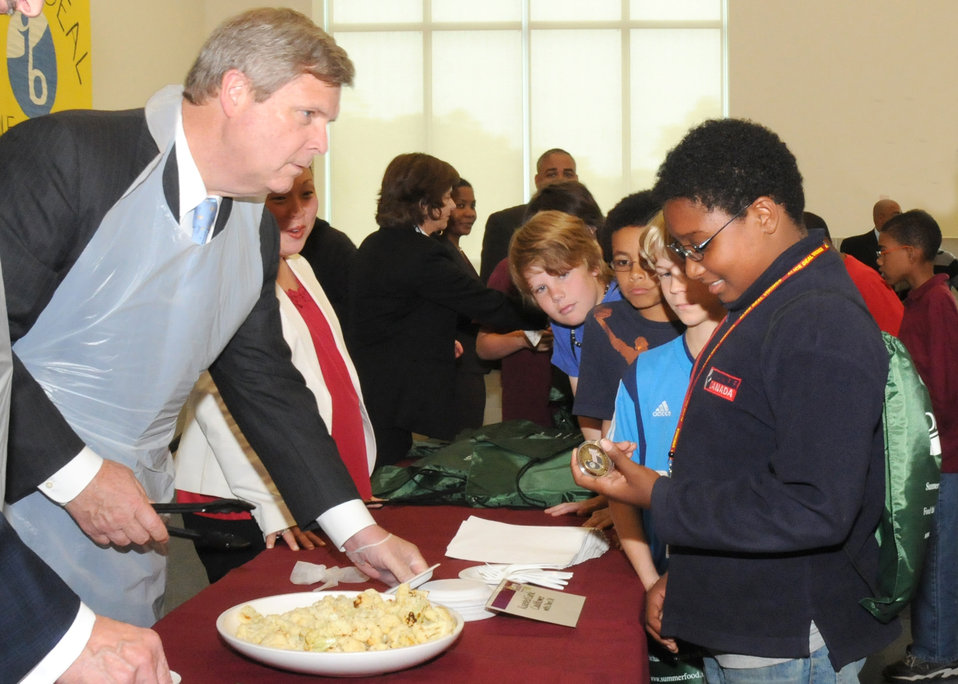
Agriculture Secretary Tom Vilsack presents his Secretary’s medal to an Alice Deal Middle School 6th grader while serving roasted garlic cauliflower with olive oil to students during his visit to the school in Washington, D. C., on Thursday, May 13, 2010. USDA photo 10di1358-199.